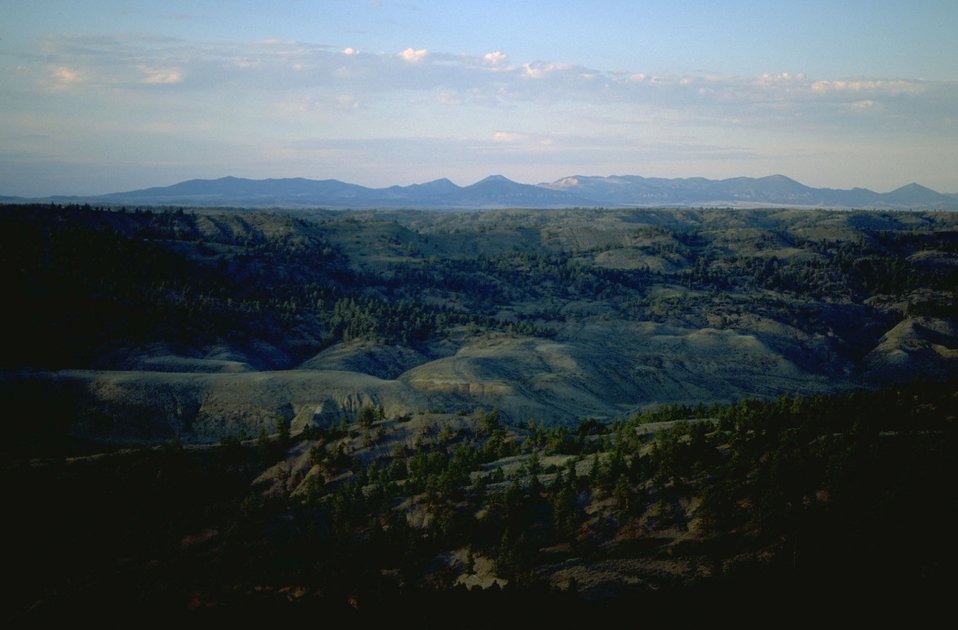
Missouri Breaks topography/scenery